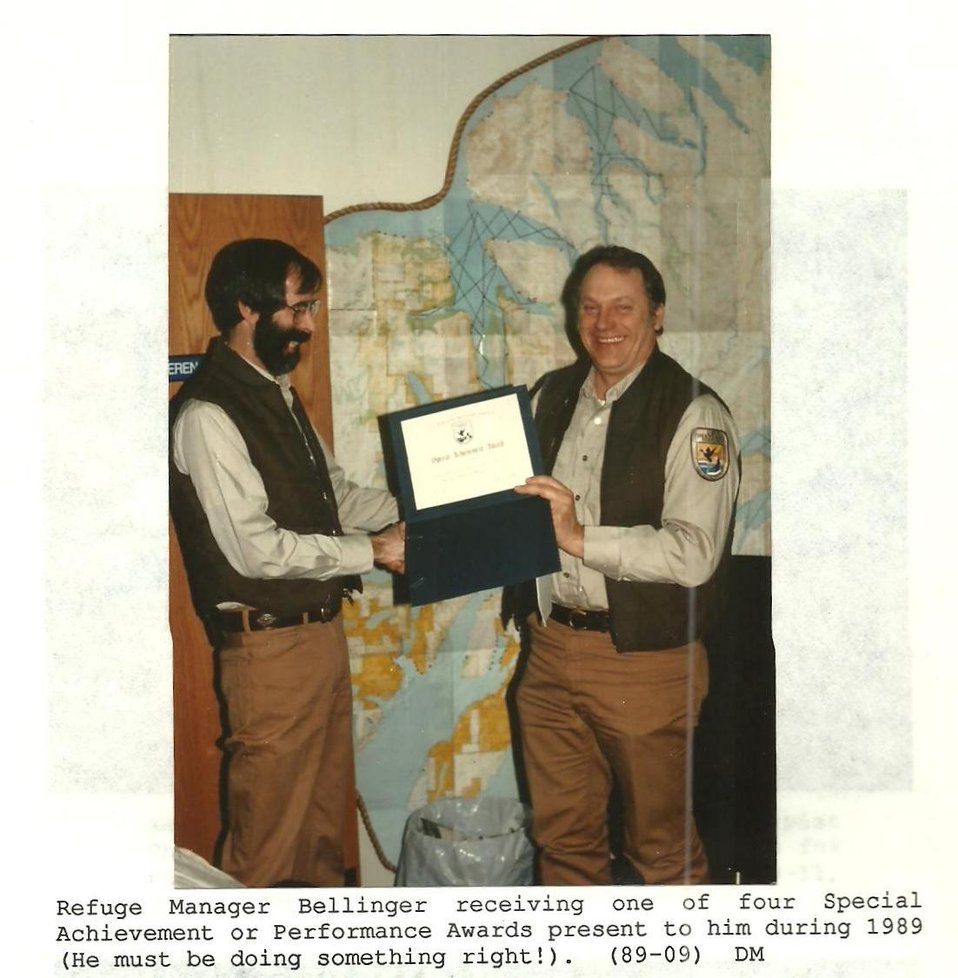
(1989) Doing Something Right

Credit: USFWS

Source and Contact: Kodiak National Wildlife Refuge